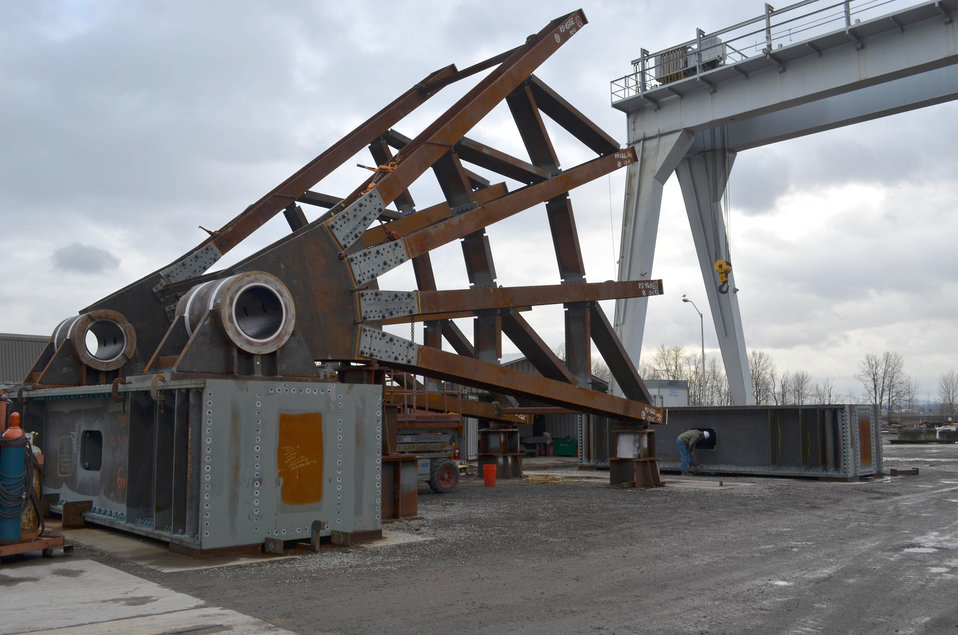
Giant Folsom spillway gates nearly ready for 600-mile journey to dam

A nearly-assembled Tainter gate waits at the Oregon Iron Works facility in Vancouver, Wash., Jan. 31, 2014, for quality assurance review. Gate components are tested to ensure precise design requirements are met, so they will fit and function correctly when installed on the new Folsom Dam auxiliary spillway in summer 2014. When complete, the spillway will allow operators to release water from Folsom Lake earlier and more safely during large storms to help reduce the risk of flooding for the Sacramento region.